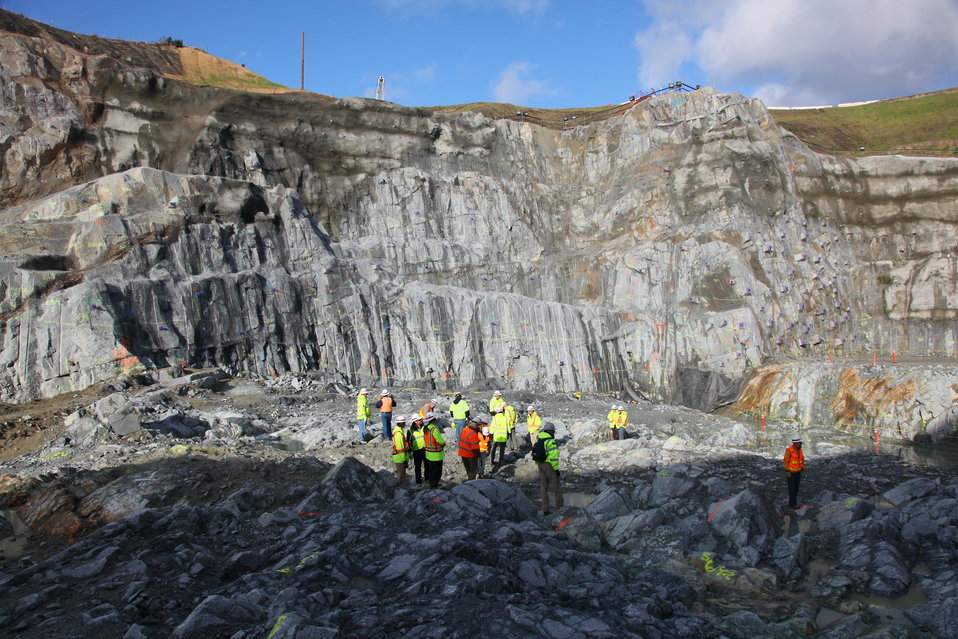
Evaluating the Folsom Dam auxiliary spillway foundation

A team of geologists from the U.S. Army Corps of Engineers Sacramento District meets with a consultant review board at the excavation site for the Folsom Dam auxiliary spillway in Folsom, Calif., Feb. 29, 2012. The board, made up of highly-qualified geology, geotechnical and structural experts, was hired to evaluate the integrity of the spillway’s foundation - a requirement for Corps’ civil works construction projects intended to reduce risk to lives to ensure they meet the highest safety standards. The spillway will allow Folsom Dam to release water sooner and more safely. The project is part of the Folsom Dam Joint Federal Project, a joint effort of the U.S. Army Corps of Engineers Sacramento District, the U.S. Bureau of Reclamation, the Central Valley Flood Protection Board and the Sacramento Area Flood Control Agency to improve the safety of the dam and reduce flood risk for the greater Sacramento area.